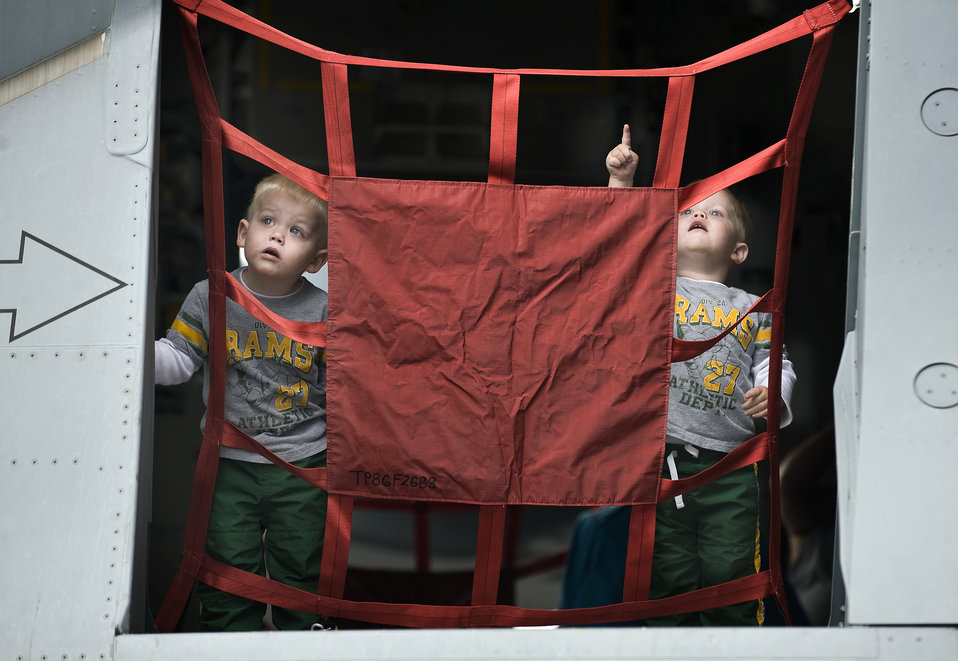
Air Force Week Sacramento

Twins Damean and Zachoria Winders, 2 years old, watch the California Capital Air Show aerial demonstrations from the cargo door of a C-17 Globemaster III Sept. 12, 2009, during Air Force Week Sacramento. Air Force Week-Sacramento is an event featuring various activities and exhibitions to educate the community about the Air Force's capabilities and missions. Damean and Zachoria Winders are the sons of Senior Airman Brian Winders, a member of the 60th Aerial Port Squadron at Travis Air Force Base, Ca.